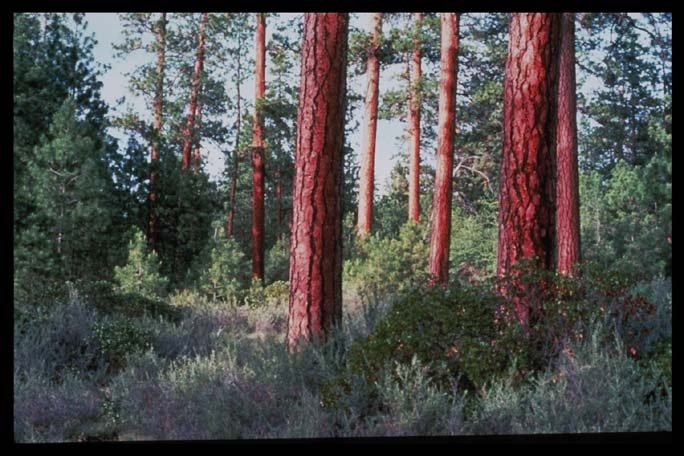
Landscape